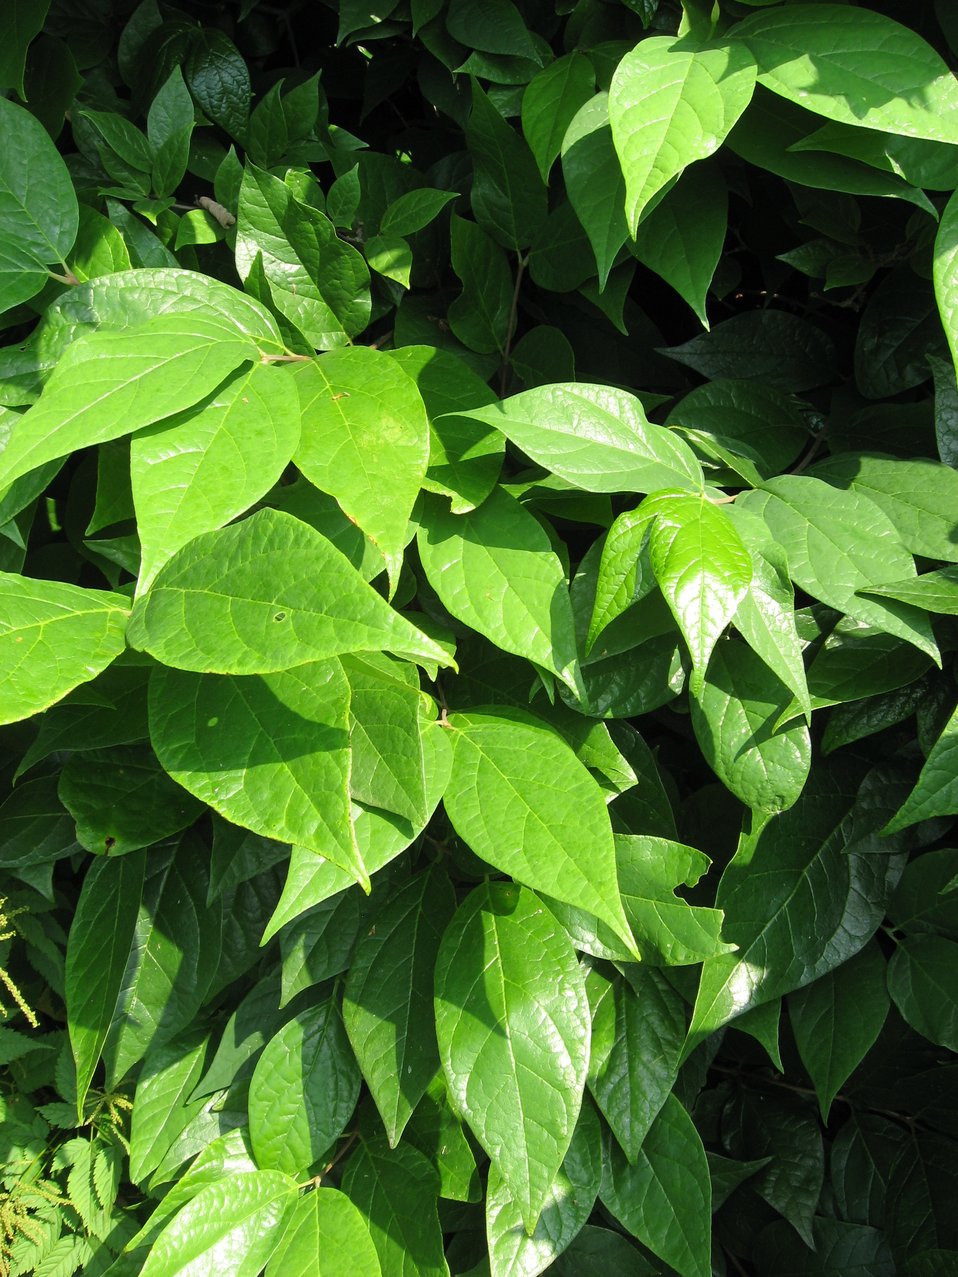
A picture of the leaves of Calycanthus floridus.